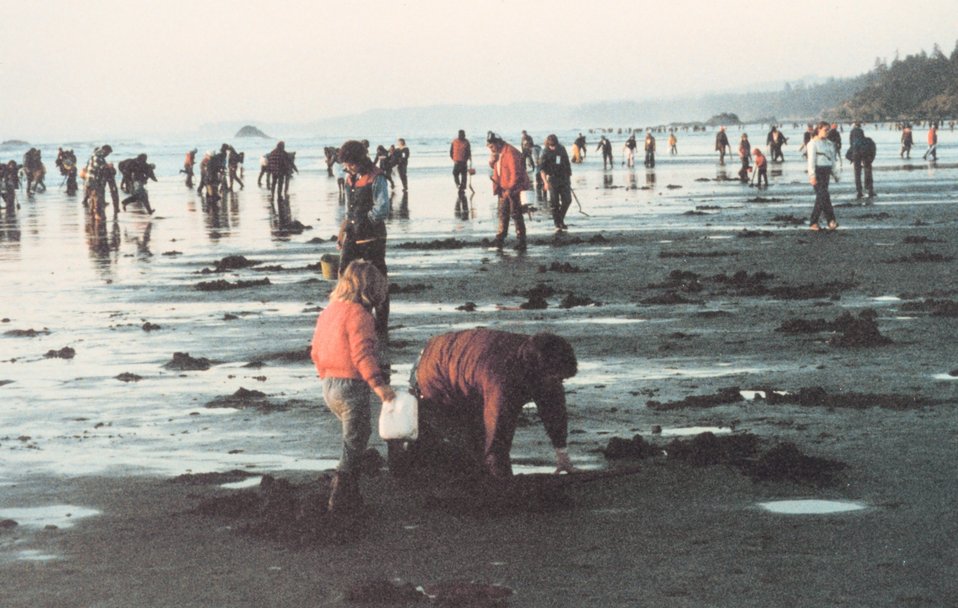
Clamming season opens on the Oregon coast.